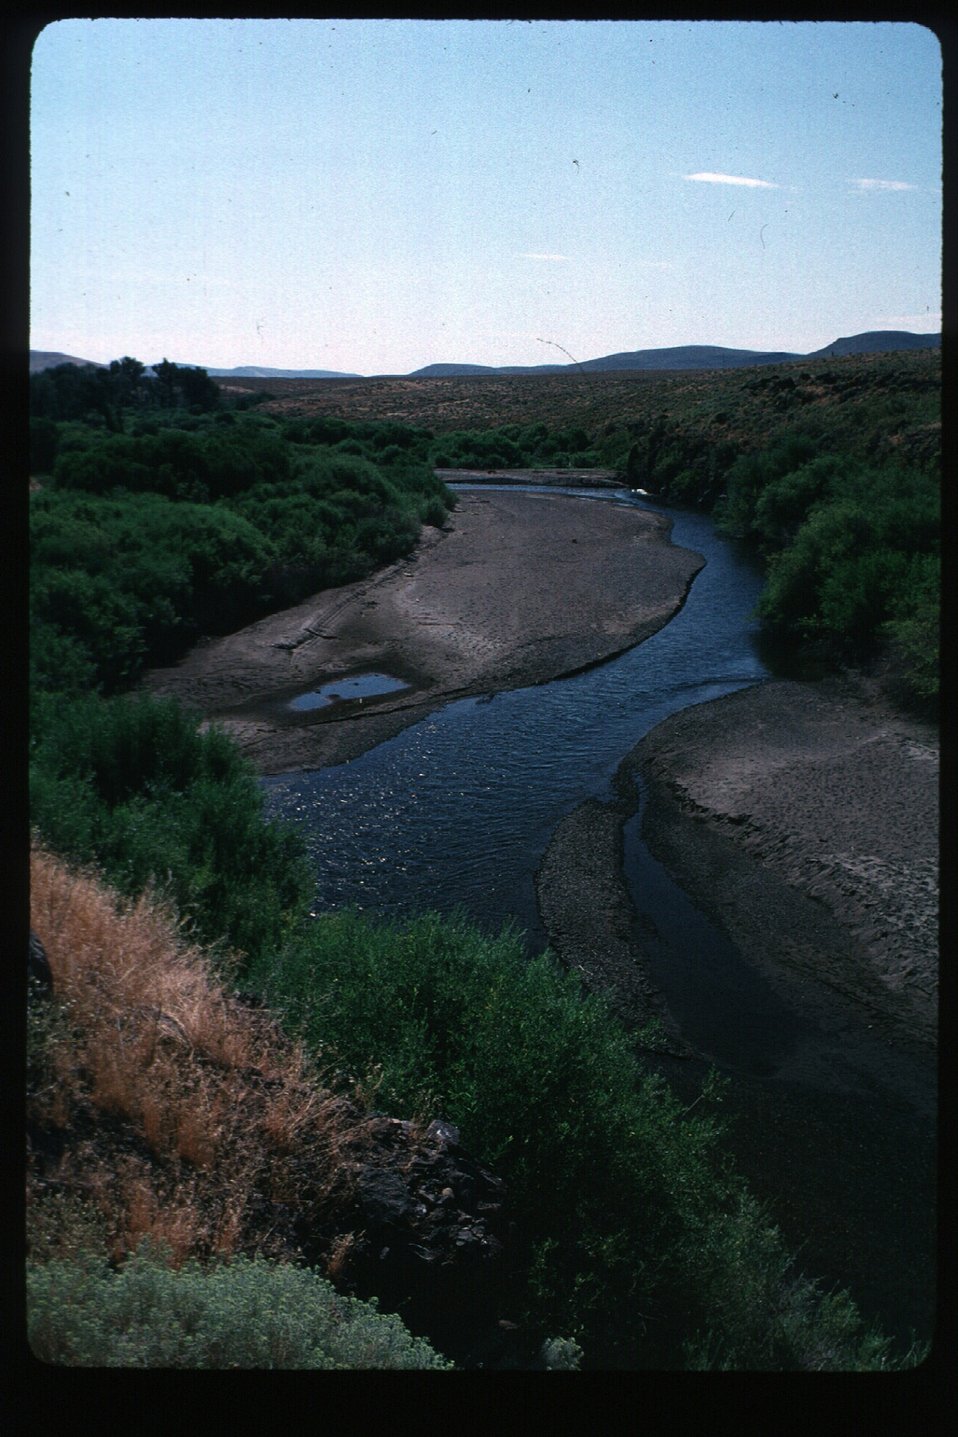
Big Wood River Scenic USRD Upper Snake River District